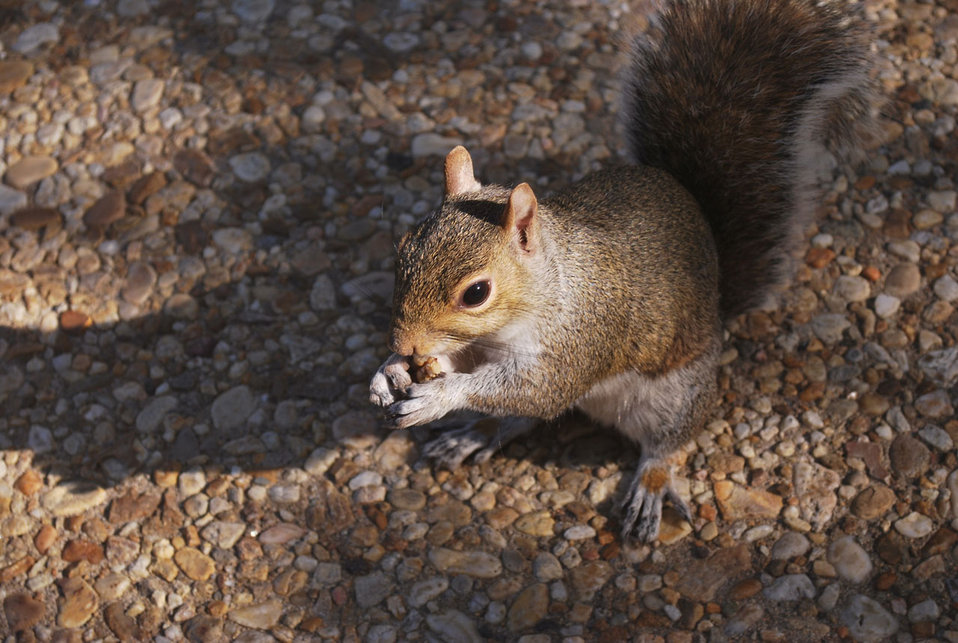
Squirrel eating.